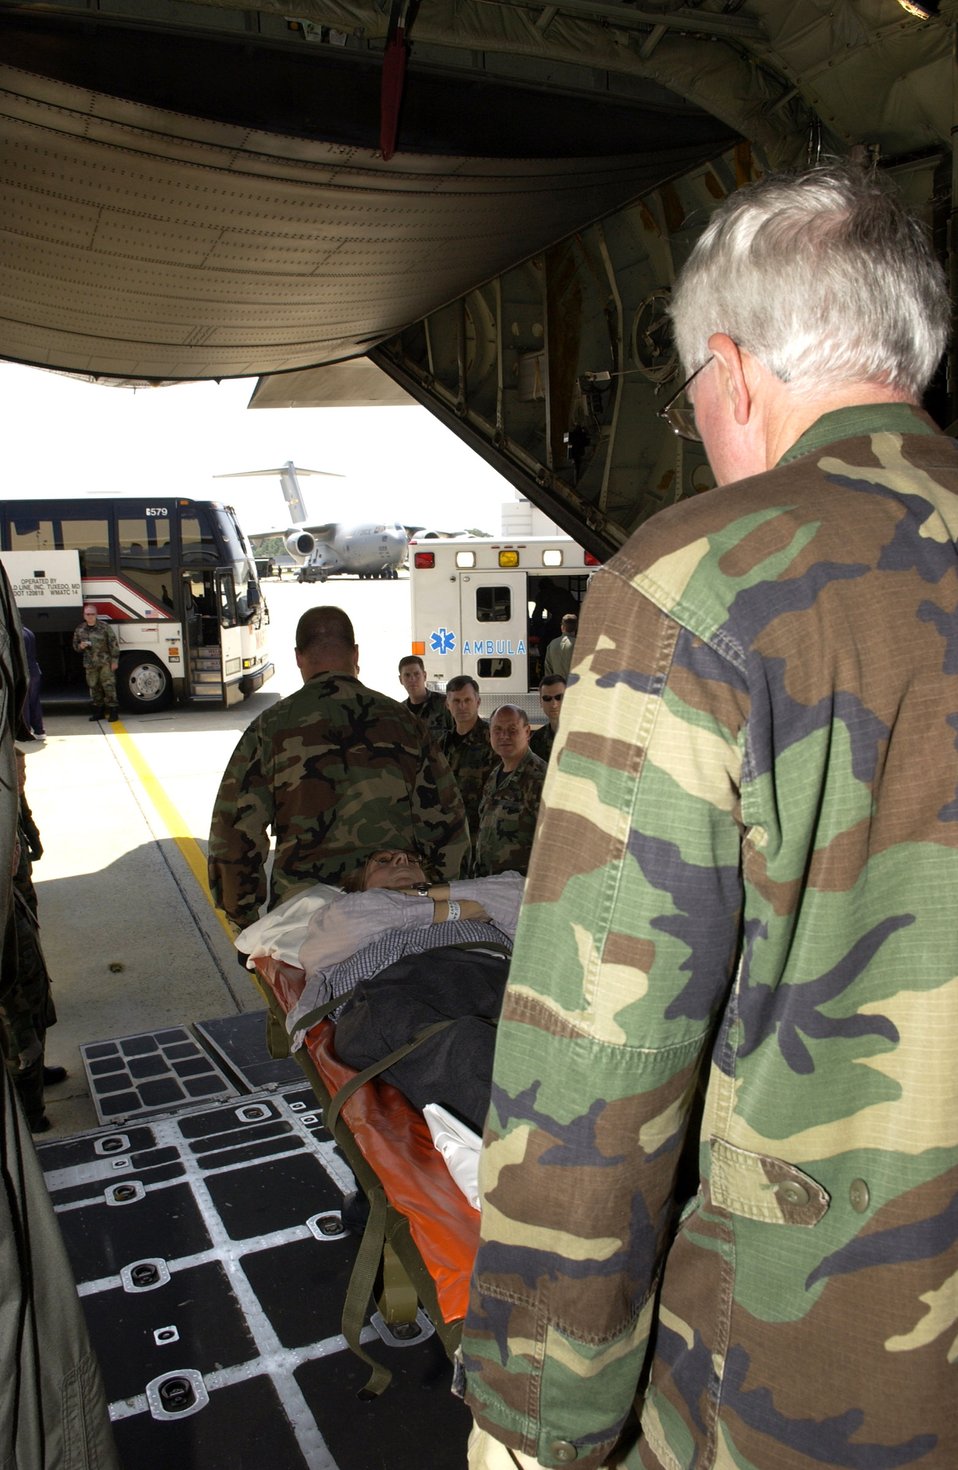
Evacuation

ANDREWS AIR FORCE BASE, Md. - A passenger is carried from a C-130 Hercules after Airmen with the 908th Airlift Wing at Maxwell Air Force Base, Ala., the 375th Aeromedical Evacuation Squadron at Scott AFB, Ill., and the 89th Medical Group here transported veterans from the Armed Forces Home in Gulfport, Miss., after Hurricane Katrina decimated the area. The veterans were flown by a C-130 Hercules from Maxwell to here where they were then taken to the Armed Forces Home in Washington, D.C.